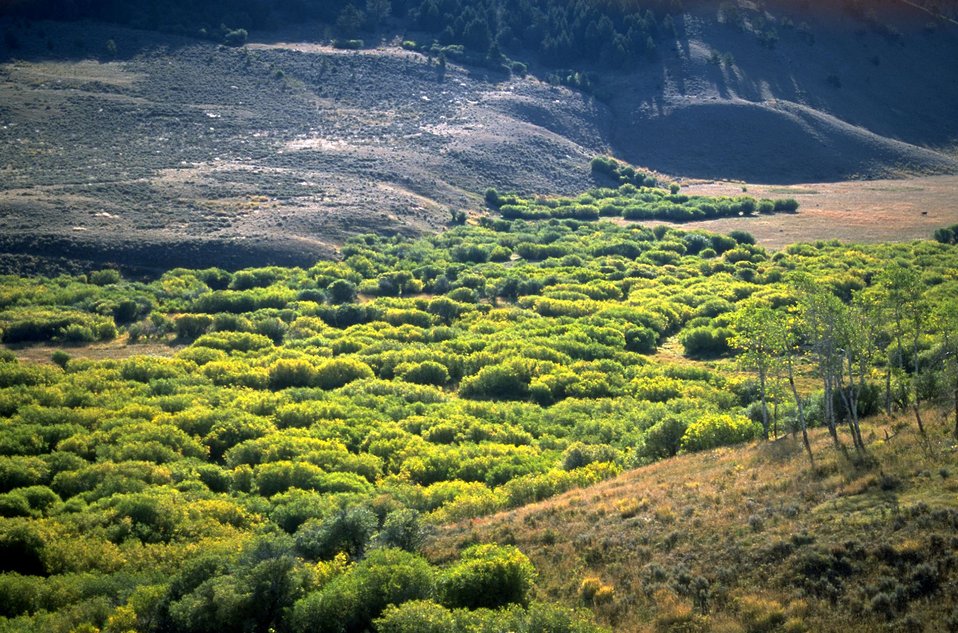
Valley floor filled with willows